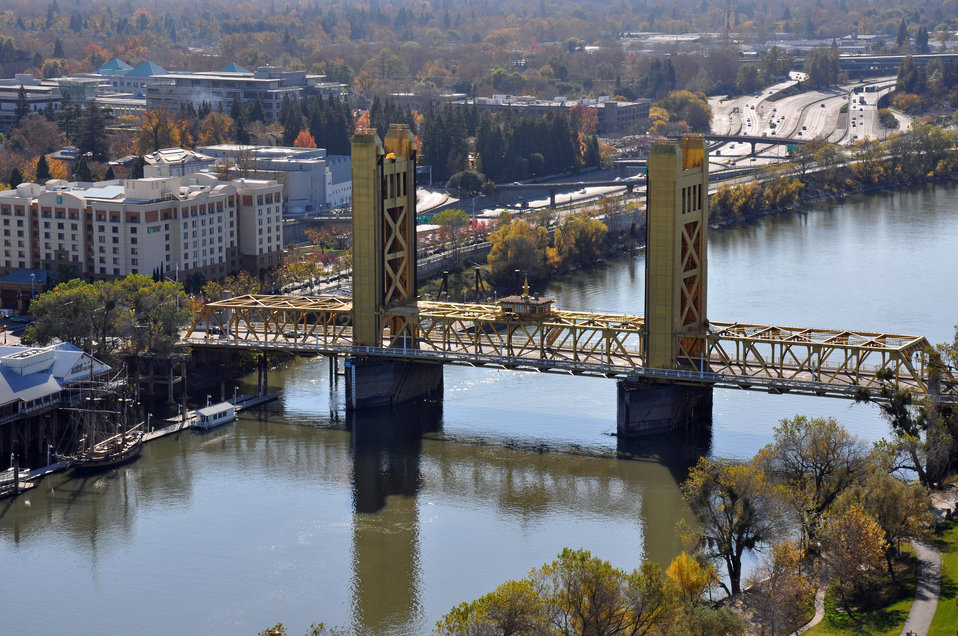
Tower Bridge

Across the Sacramento River in downtown Sacramento, CA

Photo taken from the roof of the CalSTRS Building in West Sacramento